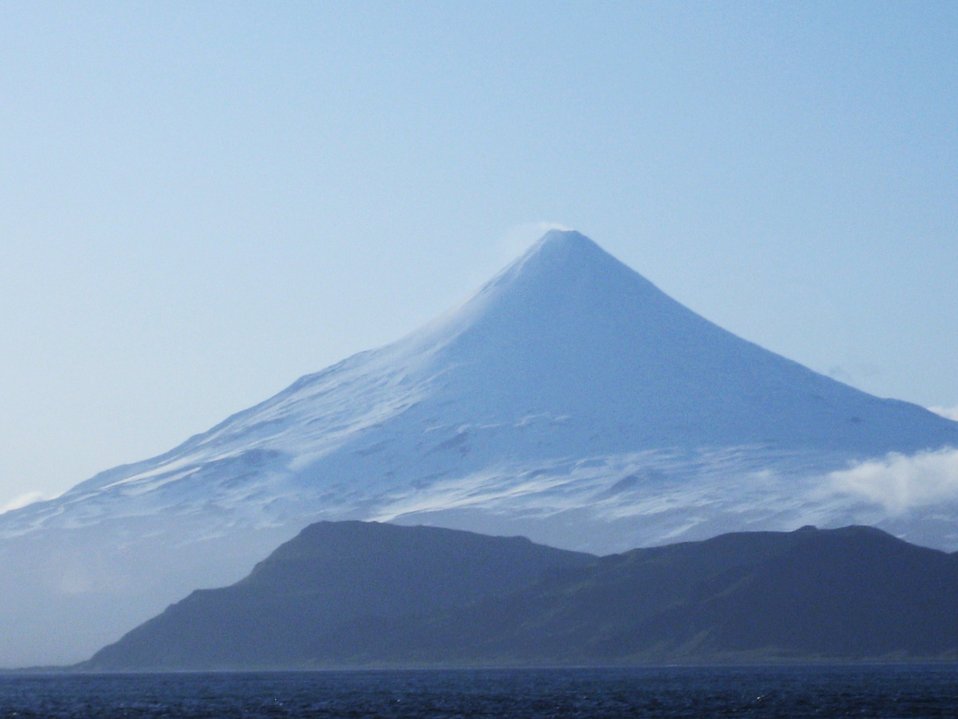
Shishaldin Volcano, the highest volcano in the Aleutian Islands. In the center of Unimak Island.